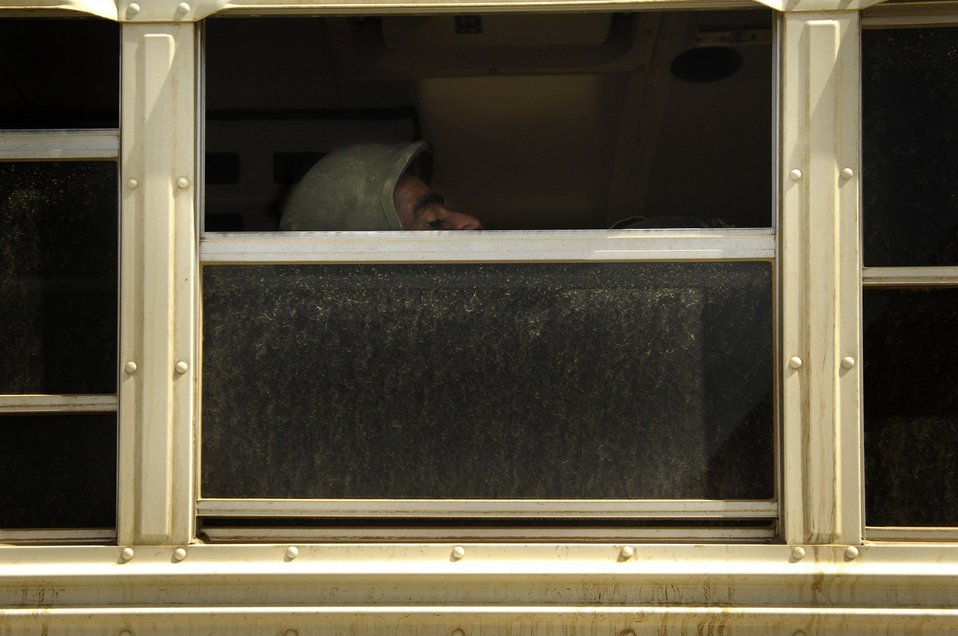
Iraqi air force in the fight

A member of the Iraqi army sits on a bus that will take him to an Iraqi air force C-130 Hercules before a March 30 flight to Basra, Iraq, at New Al Muthana Air Base, Iraq. All processing, loading and transporting of the Iraqi troops is being conducted by the Iraqi air force.